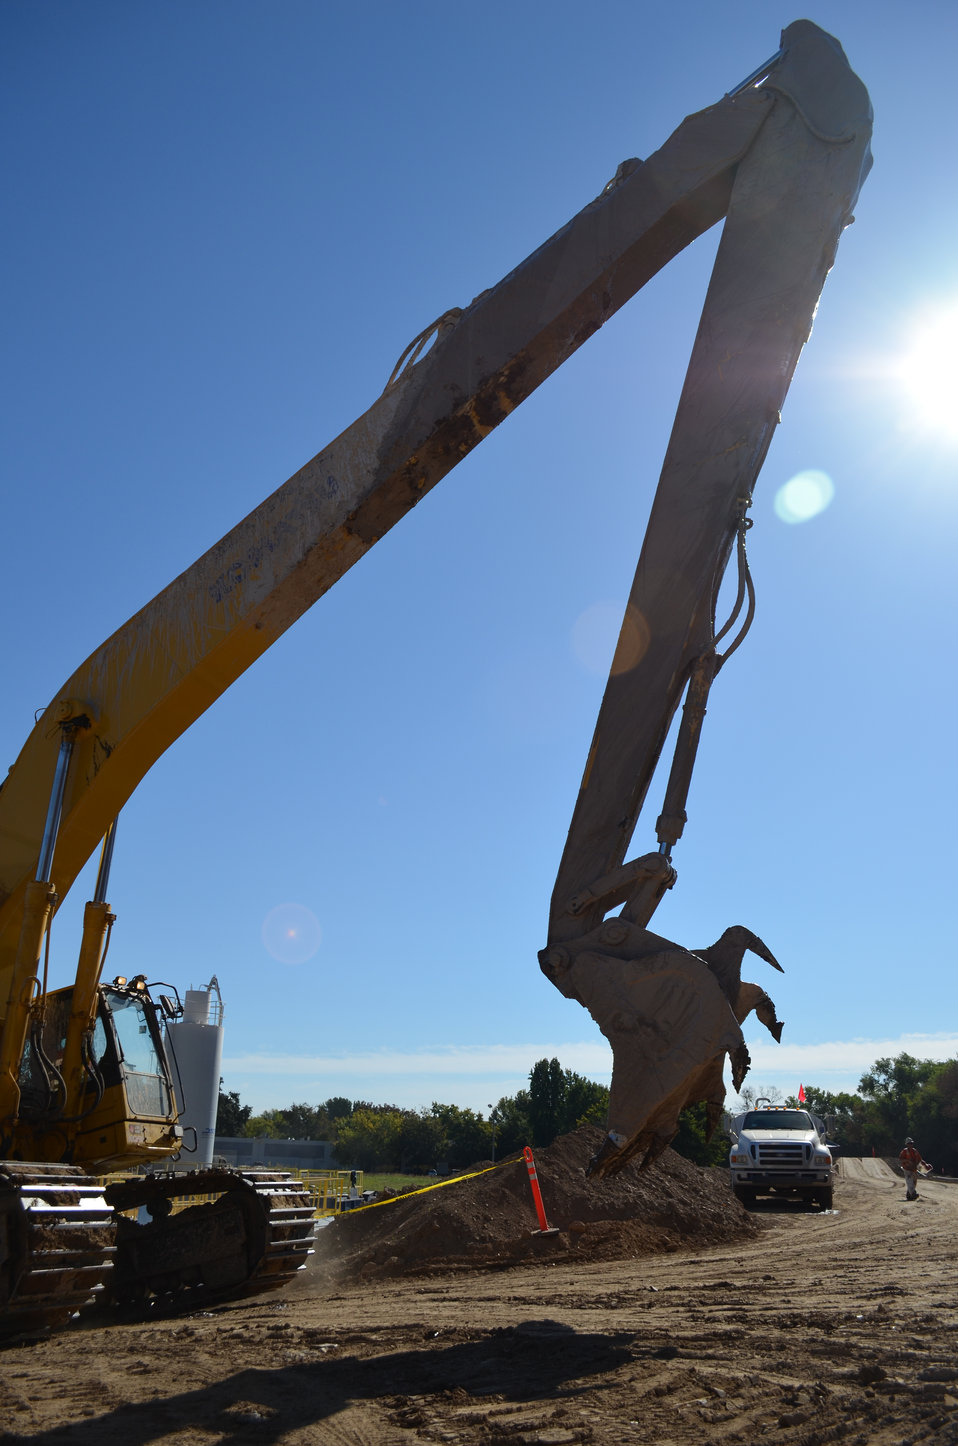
Custom-built excavator used for levee work

A custom-built excavator makes its way along the American River in Sacramento, Calif., Oct. 2, 2013. Crews are installing around 3,300 feet of seepage cutoff wall along the north bank of the American River in north Sacramento, Calif. Completion is targeted for mid-October.

The work is part of a joint flood-risk reduction effort between the Corps, the state of California’s Central Valley Flood Protection Board and Sacramento Area Flood Control District. The levee's height and slope will be brought back to pre-construction levels by November 1 – in time for the rainy season.